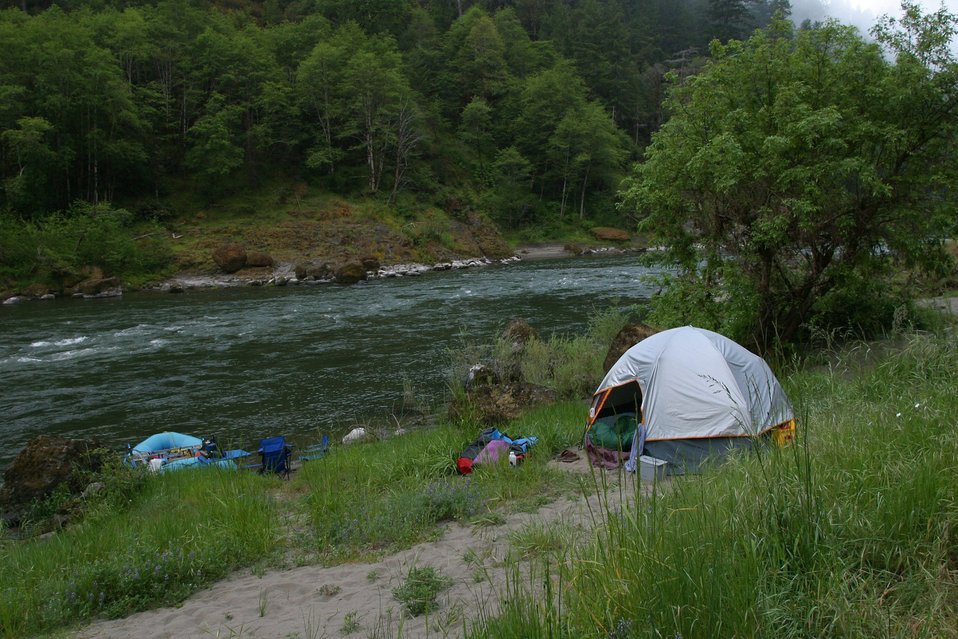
Wild section of the Rogue River from Grave Creek to Foster Bar May 19 to May 22.